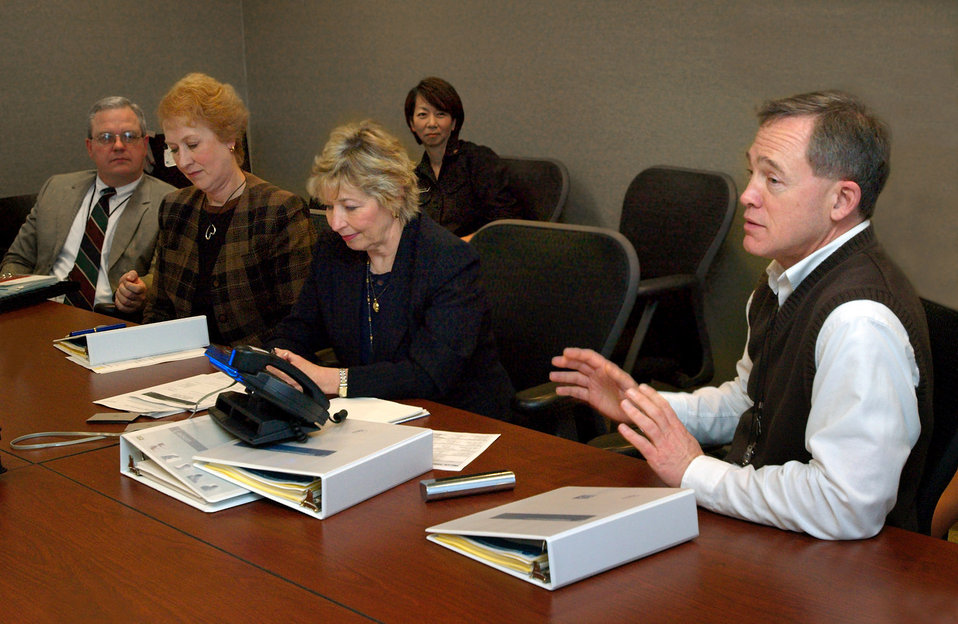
This photograph shows a meeting of CDC's Excellence in Learning Council (ELC). Shown here are (left to right) was the Dir. of the Div. of Strategic Programs, Jeff Adair; VP for Programs, CDC Foundation, Verla Neslund; Sr. Service Fellow, Joan Cioffi; Dir. of the Office of Workforce and Career Development (OWCD), Stephen B. Thacker; in the background was Medical Epidemiologist, Robin Ikeda.